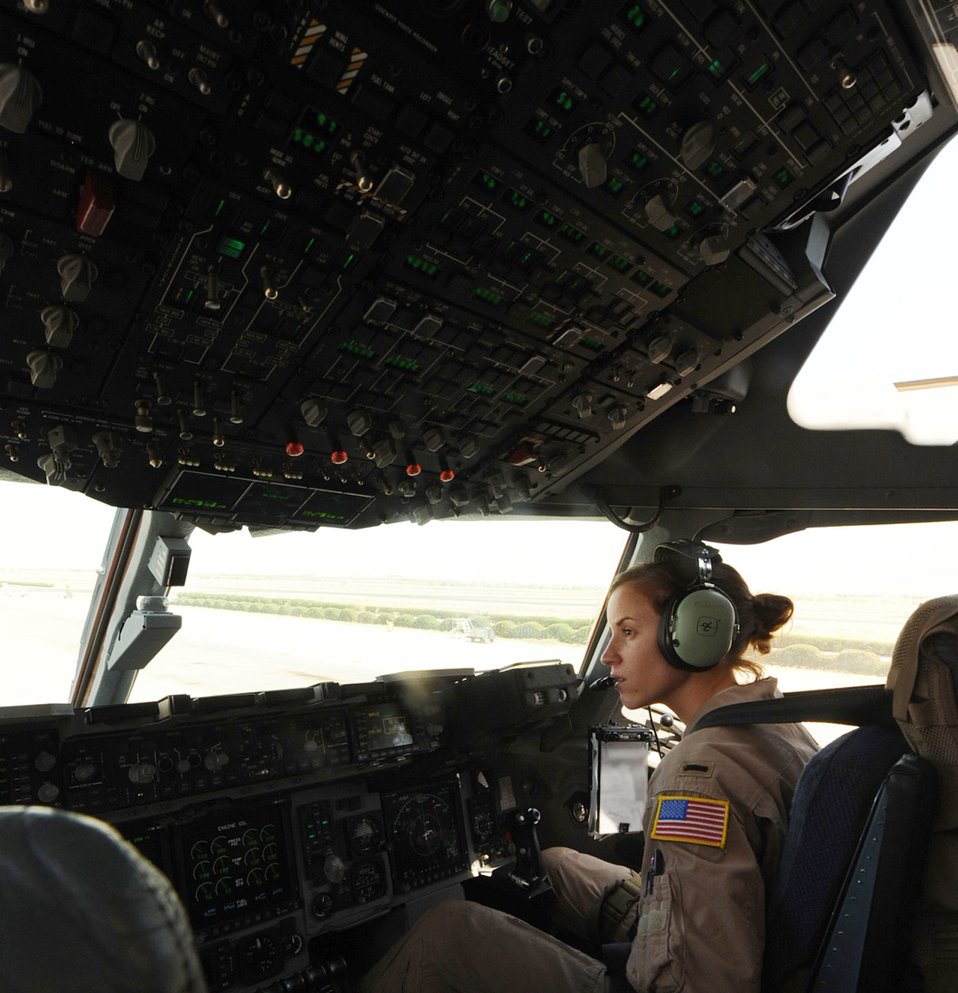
C-17 flight commemorates Women's History Month

First Lt. Erica McCaslin, 816th Expeditionary Airlift Squadron pilot, taxis a C-17 Globemaster III in at an air base in Southwest Asia March 10, 2010. Lieutenant McCaslin was part of an all-female crew in honor of Women's History Month and is deployed from the 14th Airlift Squadron at Charleston Air Force Base, S.C.